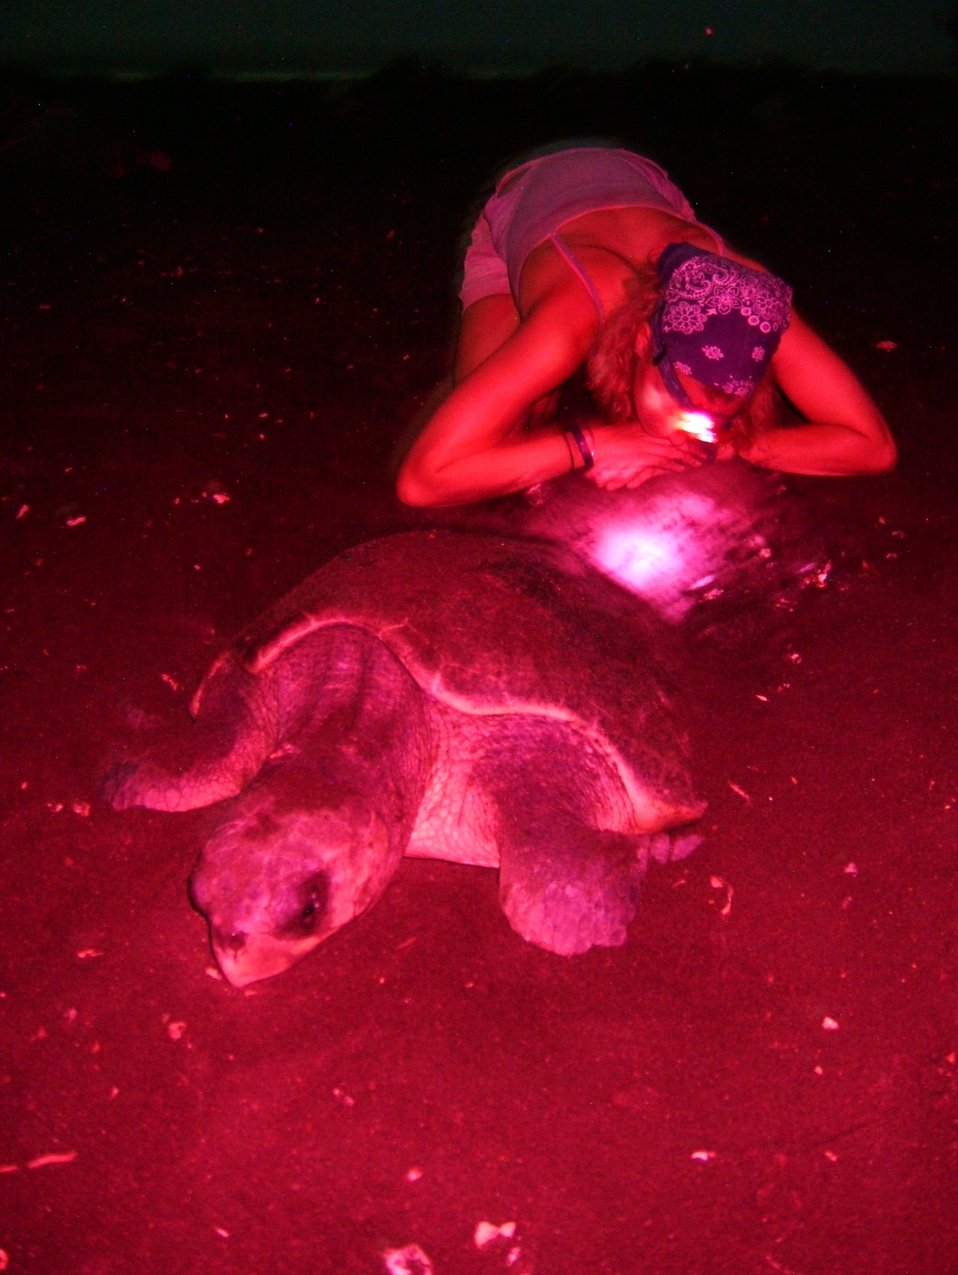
Scientist watching sea turtle lay eggs.